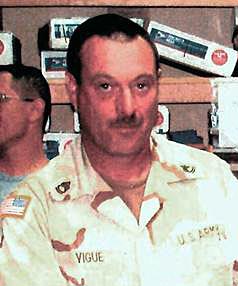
Dennis Vigue joined the Maine Army National Guard in 1977 and became a Wheeled Vehicle Mechanic. He moved to Hawaii in 1980 and transferred to the Hawaii Army National Guard. Dennis deployed in October 2004 to Iraq Operation Iraqi Freedom III and returned in January 2006. During OIF III, Dennis suffered a leg laceration and went through the Wounded Warrior Program and medically retired in July 2007. In 2002, he had acquired a bachelor’s degree in Information Technology, and in November 2009, he joined the Fish and Wildlife Service as an IT Specialist for Pacific Islands Office.